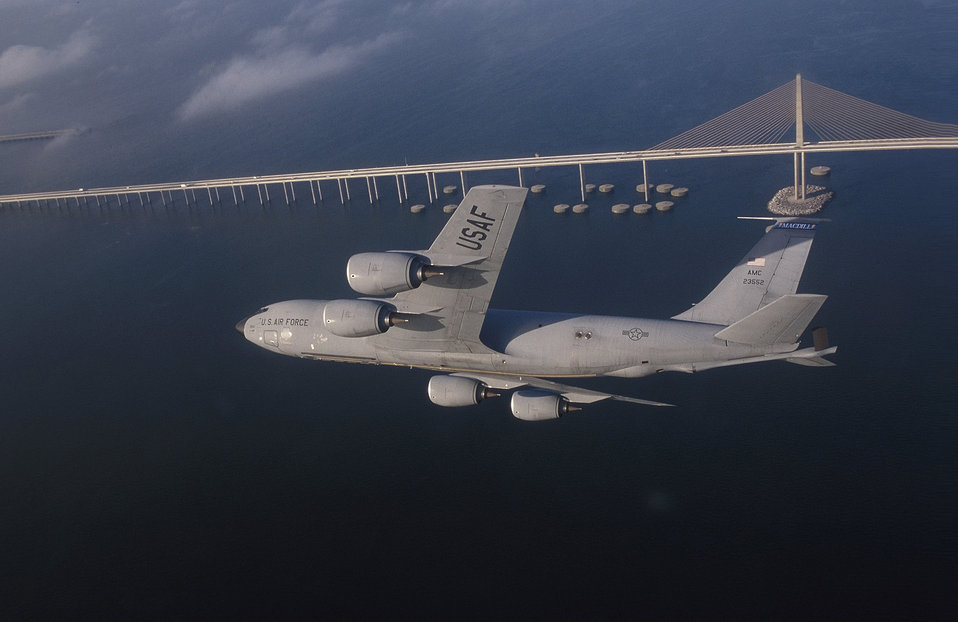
KC-135 Stratotanker

FILE PHOTO --A KC-135R Stratotanker assigned to the 6th Air Refueling Wing, 91st Air Refueling Squadron, at MacDill Air Force Base, Fla., flies a training mission over central Florida. The KC-135's principal mission is air refueling. This asset greatly enhances the U. S. Air Force's capability to accomplish its mission of Global Engagement. It also provides aerial refueling support to U.S. Navy, U.S. Marine Corps and allied aircraft. Four turbofans, mounted under 35-degree swept wings, power the KC-135 to takeoffs at gross weights up to 322,500 pounds. Nearly all internal fuel can be pumped through the tanker's flying boom, the KC-135's primary fuel transfer method. A special shuttlecock-shaped drogue, attached to and trailed behind the flying boom, may be used to refuel aircraft fitted with probes.